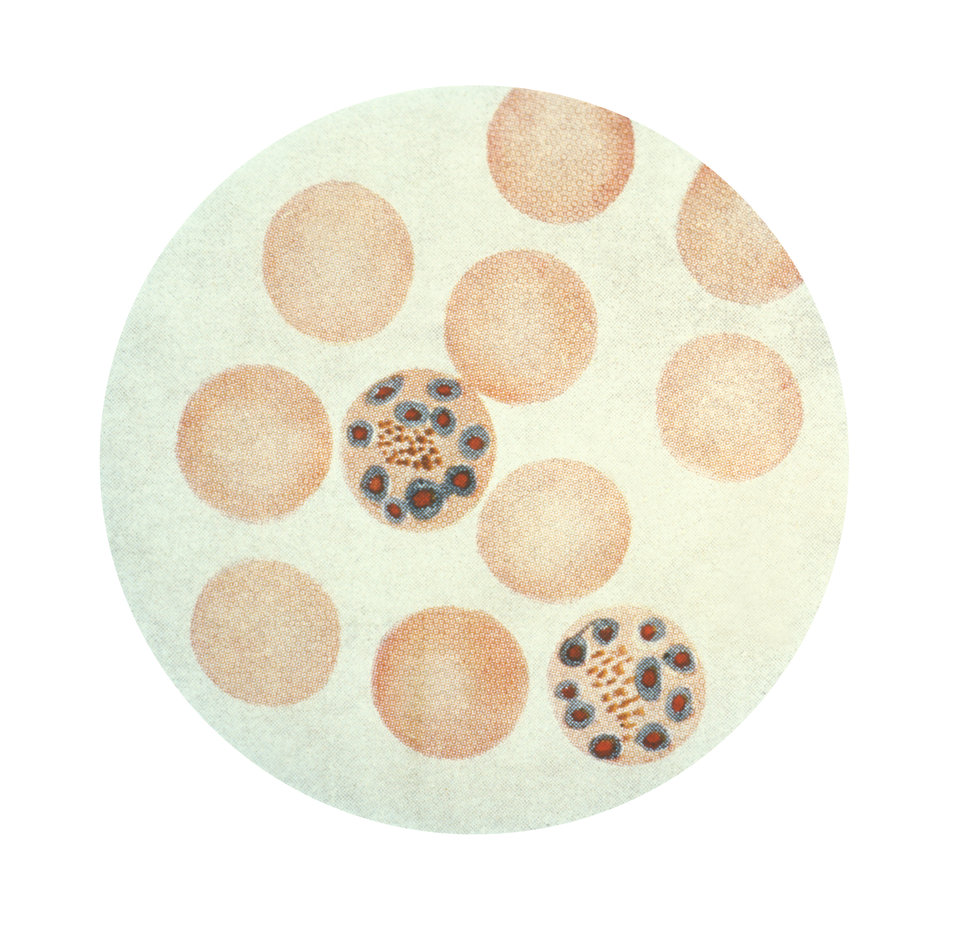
A photomicrograph of Plasmodium malariae revealing developed erythrocytic merozoites using Wright's stain. (x1500)